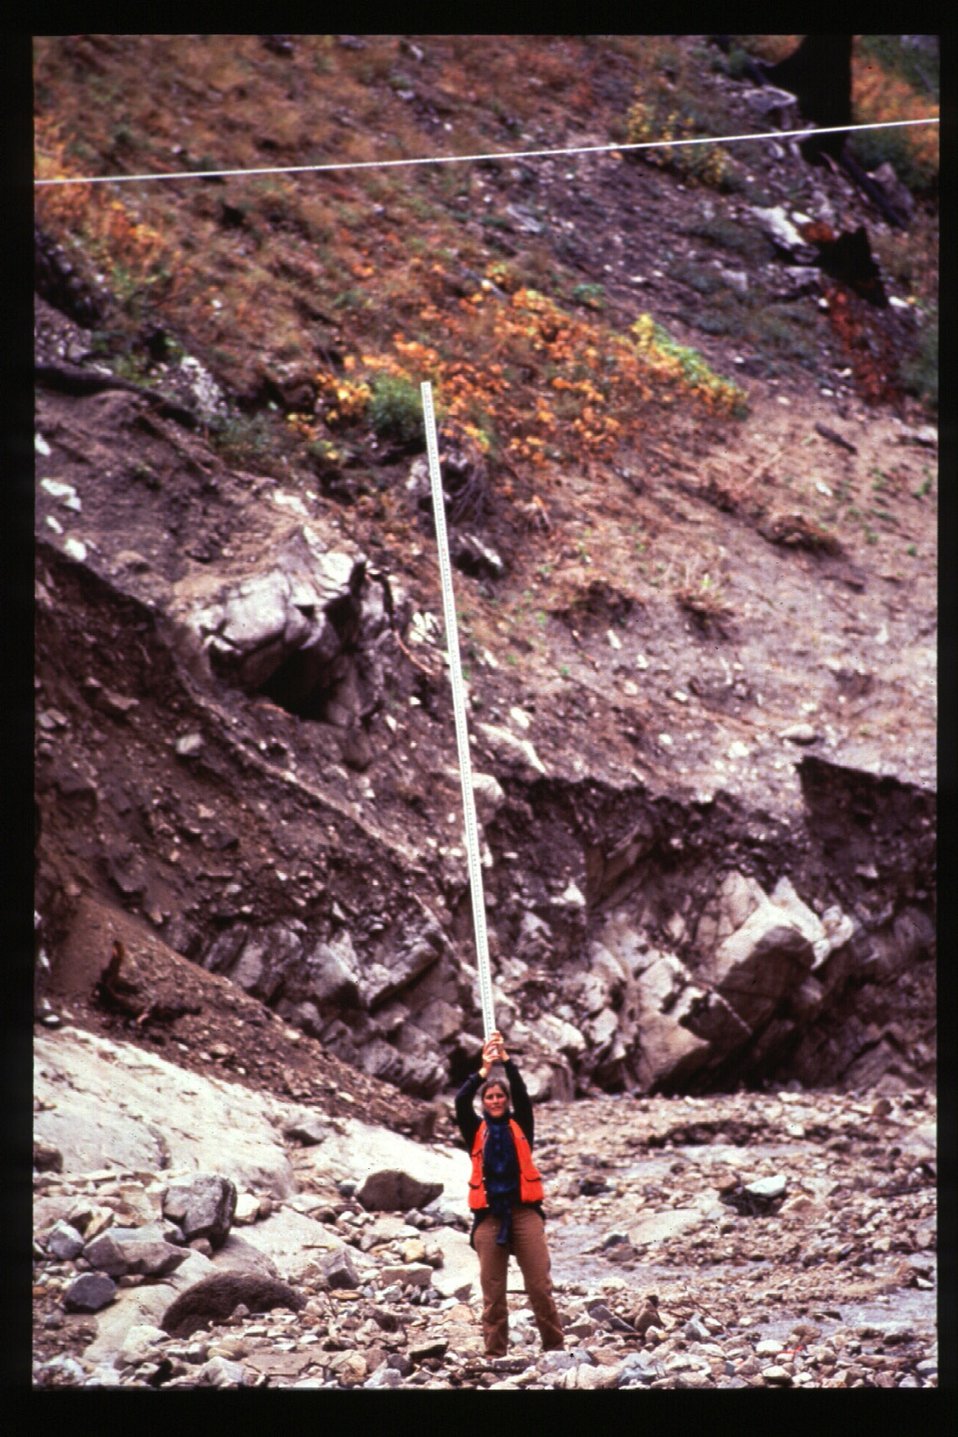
8th Street Fire Four Rivers Field Office LSRD Lower Snake River District